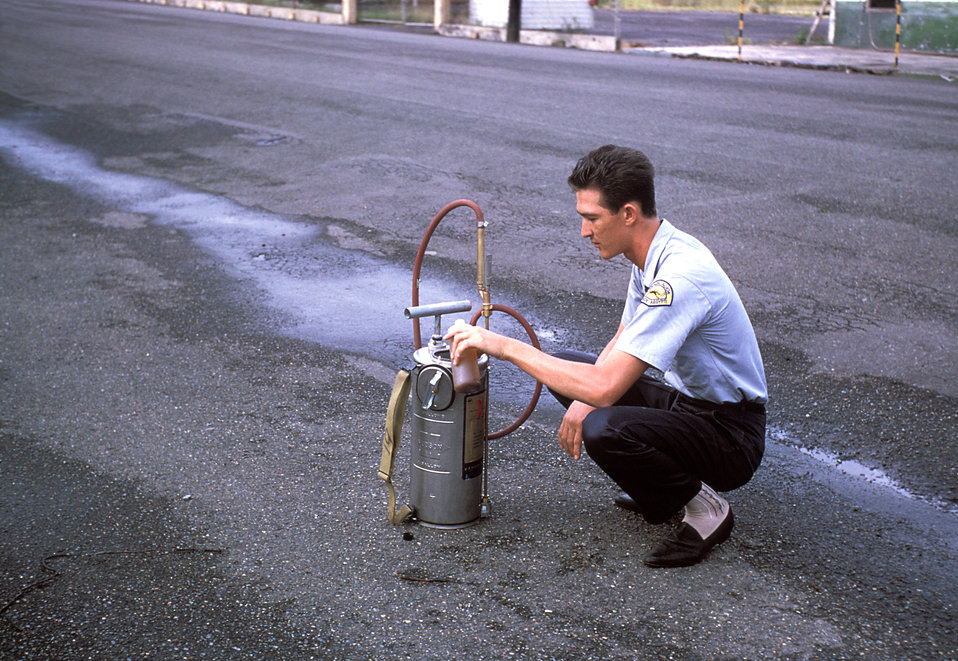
This photograph was taken during the 1965 Aedes Aegypti eradication program in Miami, Florida, 1965.